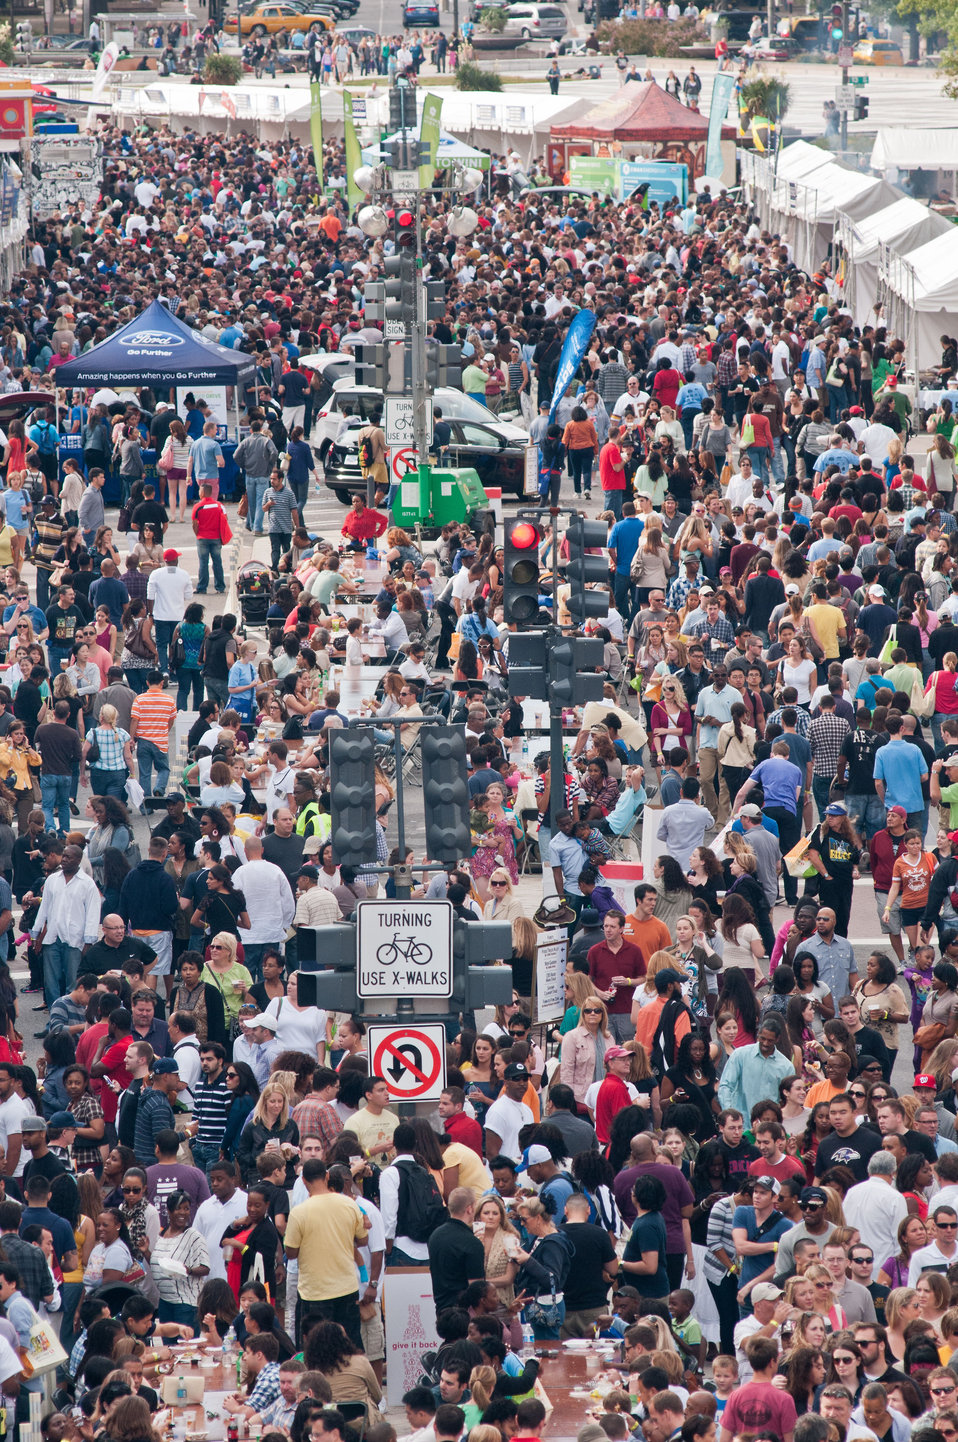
The Taste of D.C., event highlights more than 70 eateries, 30 specialty beer providers, the United Service Organization (USO) Metropolitan Washington, and live bands. It is anticipated that more than 500,000 people will attend over the course of the three-day event, which extends from the White House to the Capitol, along Pennsylvania Ave. in Washington D.C. on Saturday, October 6, 2012. Agriculture Food Safety and Inspection Service specialists present talks and cooking demonstrations. Agriculture’s mobile Discovery Zone is on hand to educate children and parents about the four main principals of food safety – clean, separate, cook and chill.